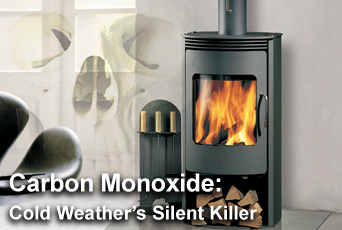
Carbon monoxide poisoning

Air Force medical officials warn personnel to be aware of the dangers that can accompany the use of home heating systems during cold weather. The greatest danger comes from carbon monoxide poisoning.